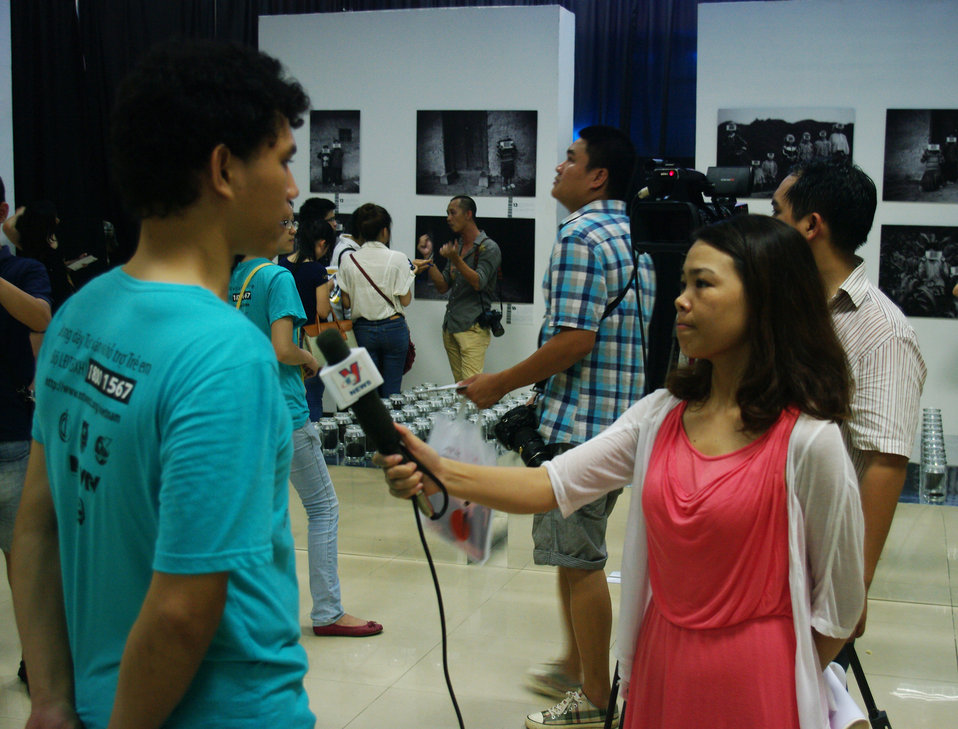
MTV EXIT opens Youth Forum in Hanoi